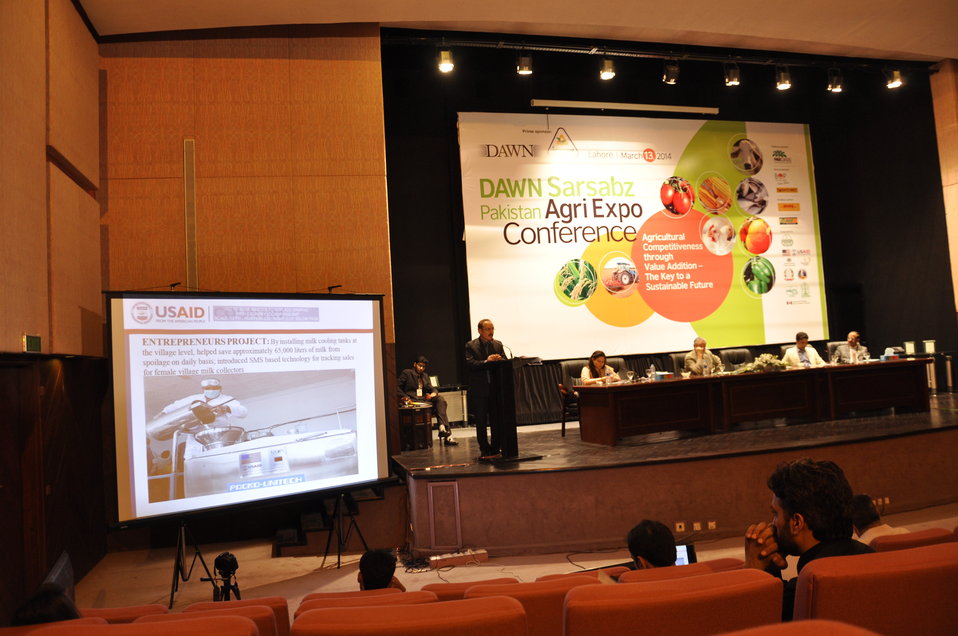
USAID's representative, Mr. Ghani Khan Marwat, during a presentation at Dawn Sarsabz Pakistan Agri Expo.